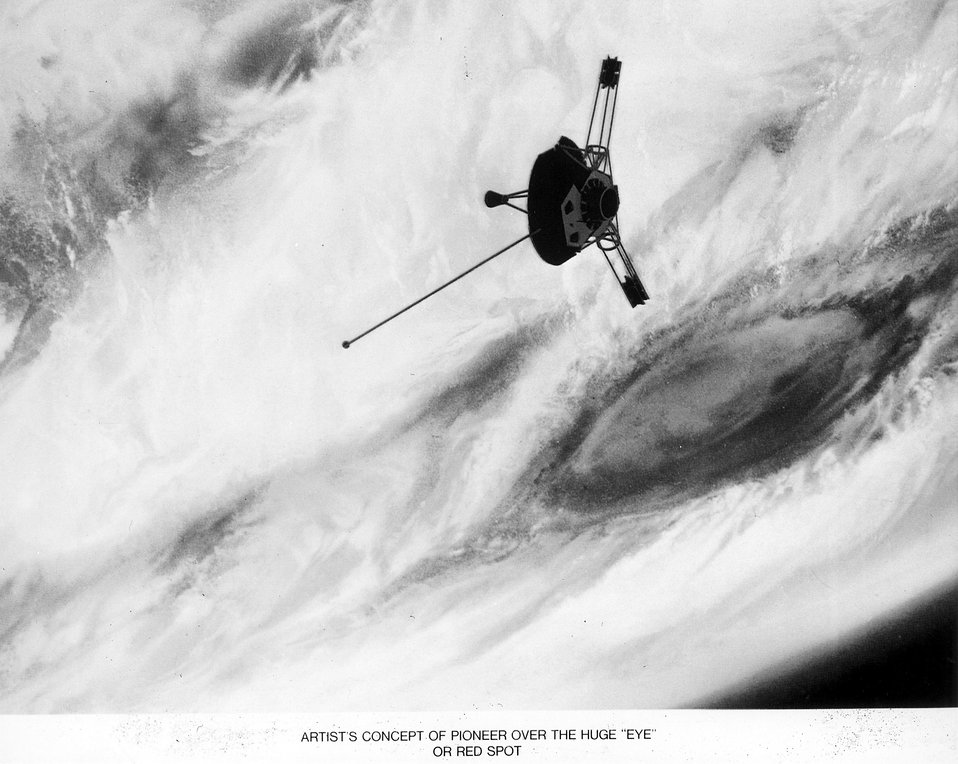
An artist's concept of the NASA Pioneer 10 spacecraft over the huge eye or red spot of the planet Jupiter.